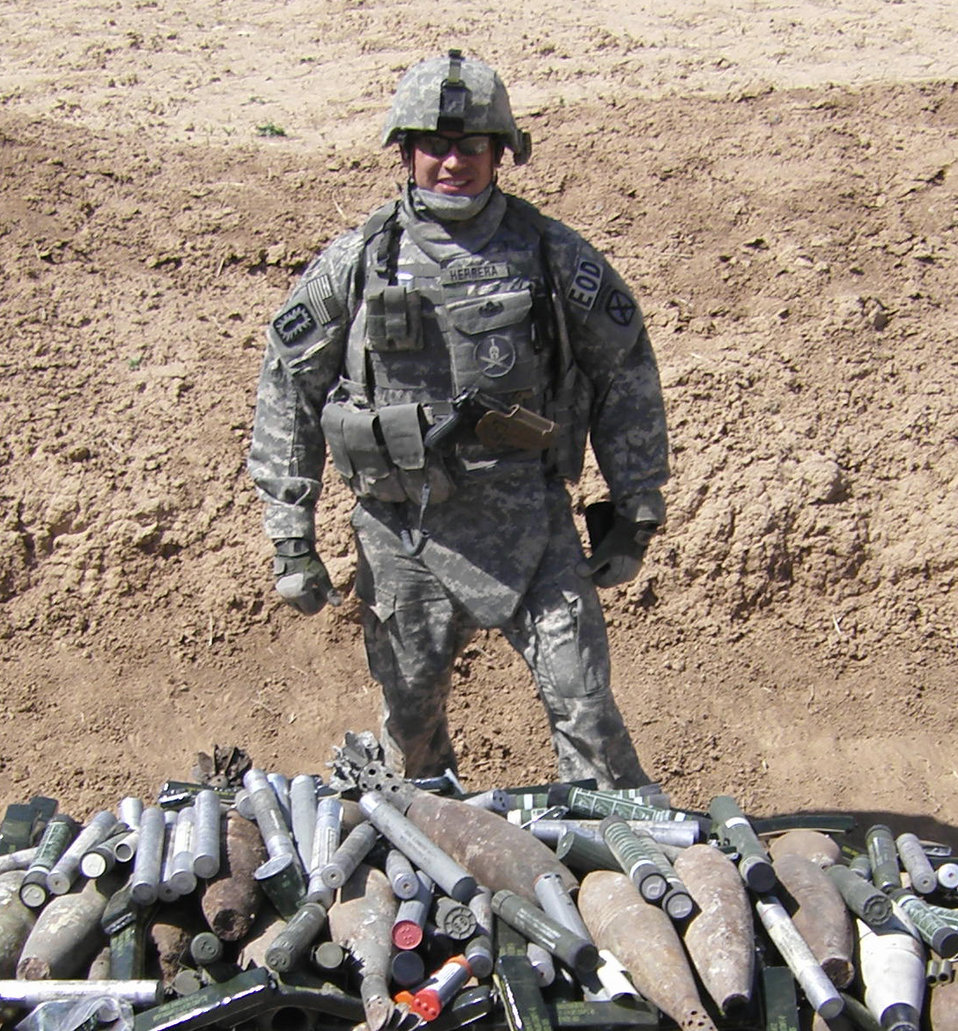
12 Outstanding Airmen of the Year named

Tech. Sgt. Manuel Herrera, an explosive ordnance disposal craftsman with the 375th Civil Engineer Squadron at Scott Air Force Base, Ill., led 251 missions, survived four attacks and captured 36 terrorists while deployed to Kirkuk Air Base, Iraq. The Air Force Chief of Staff reviews the selections. The selections for the 2009 12 Outstanding Airmen of the Year were announced July 2 by Air Force officials at Randolph AFB, Texas.